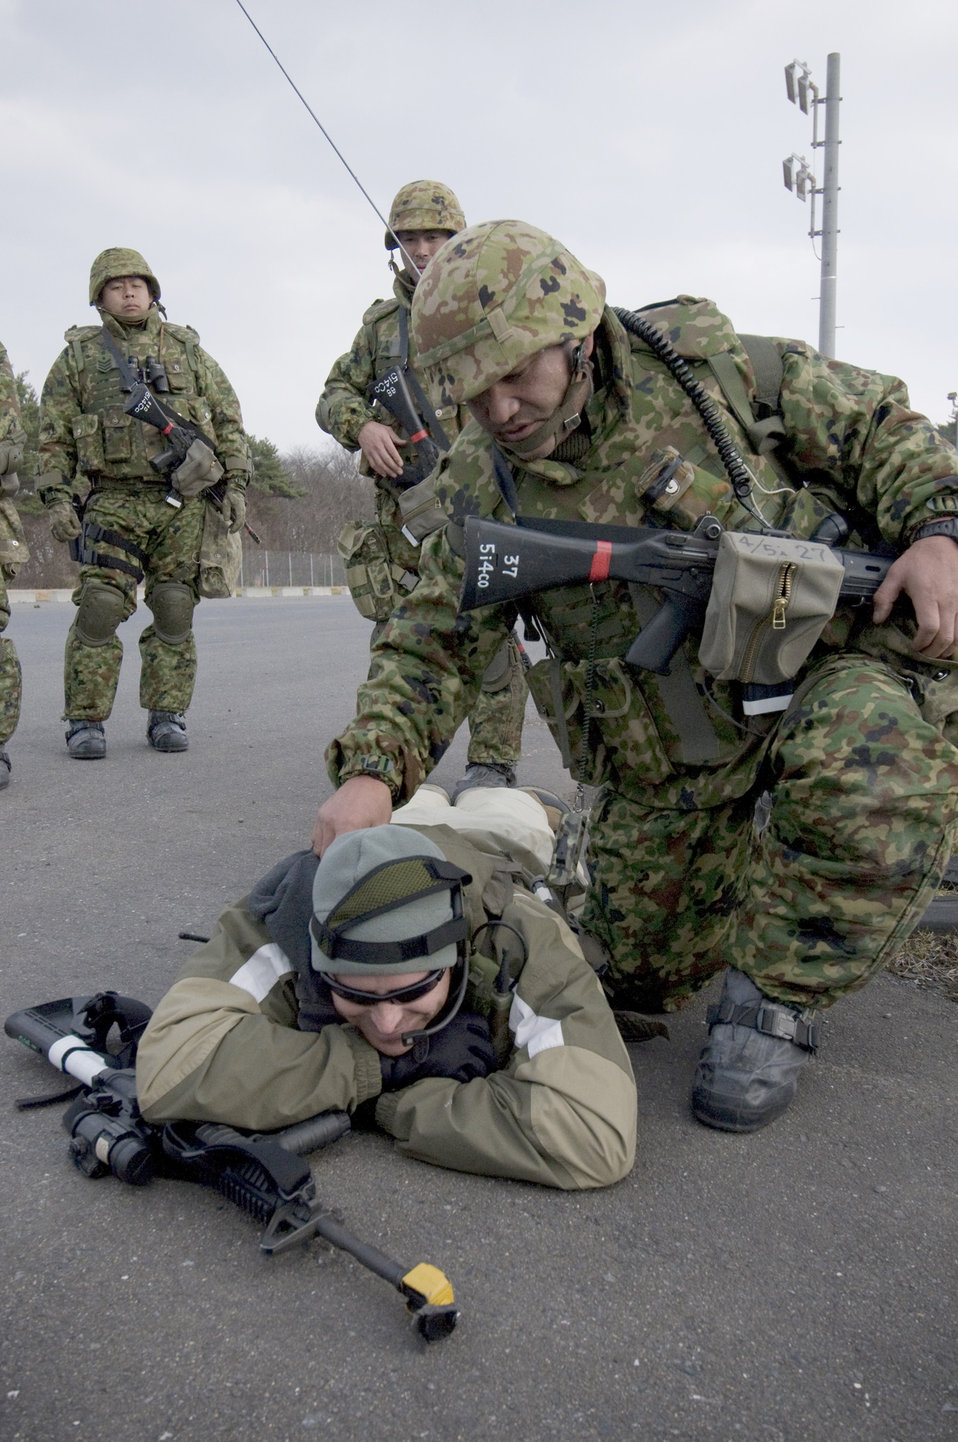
Guard and Protect

A soldier from Japan Ground Self-Defense Force, 9th Division, 5th Infantry Regiment, Aomori, verifies a simulated kill on Tech. Sgt. Paul Barentine during a bilateral exercise Dec. 5, 2010, at Misawa Air Base, Japan. The JGSDF troops were part of a two-day Guard and Protect Exercise that partnered them with the Japan Air Self-Defense Force 3rd Air Wing and the 35th Security Forces Squadron. Sergeant Barrantine is a 35th Security Forces Squadron member and opposing forces volunteer.